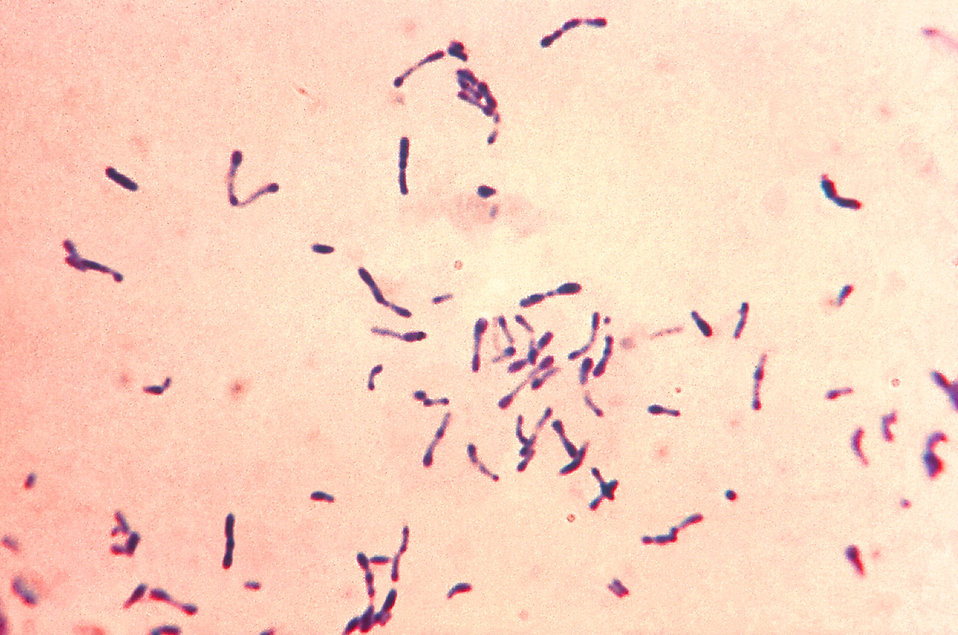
This photomicrograph depicted a number of Gram-positive Corynebacterium diphtheriae bacteria, which had been stained using the methylene blue technique. The specimen was taken from a Pai's slant culture.